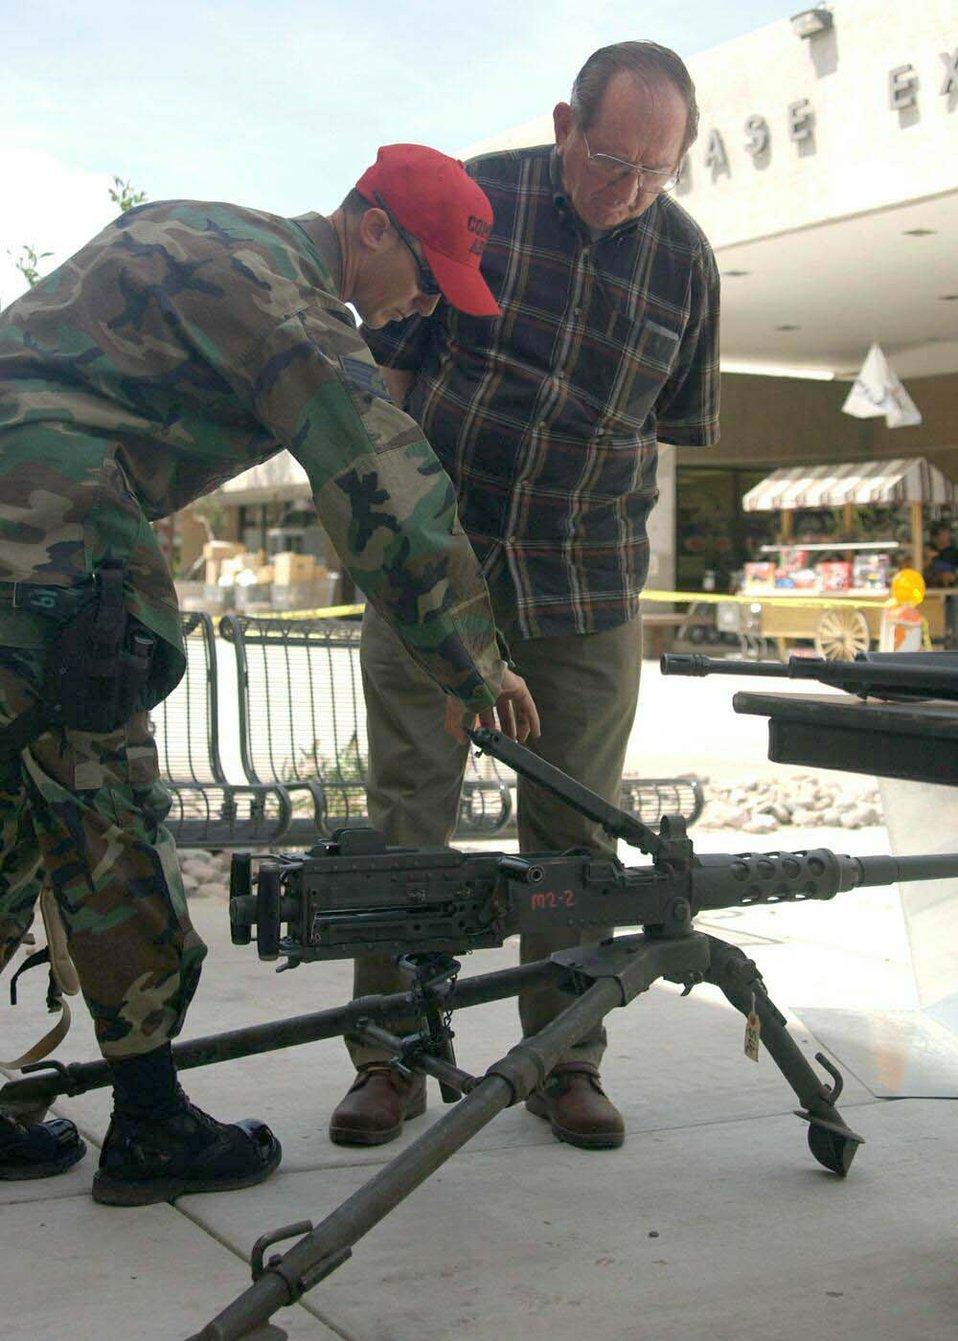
Police week showcase

DAVIS-MONTHAN AIR FORCE BASE, Ariz. -- Staff Sgt. Justin Youvan talks with John Rinehart about the M-2 machine gun here May 17 during National Police Week. Sergeant Youvan is a combat arms instructor with the 355th Security Forces Squadron, and Mr. Rinehart is a retired Air Force fighter pilot.